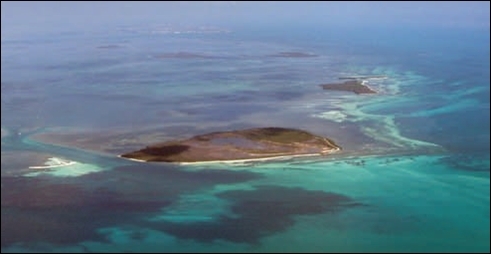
Key West NWR aerial

The storied waters that surround the islands of Key West National Wildlife Refuge are prime locations for fishing, snorkeling, diving and wildlife viewing. (USFWS)